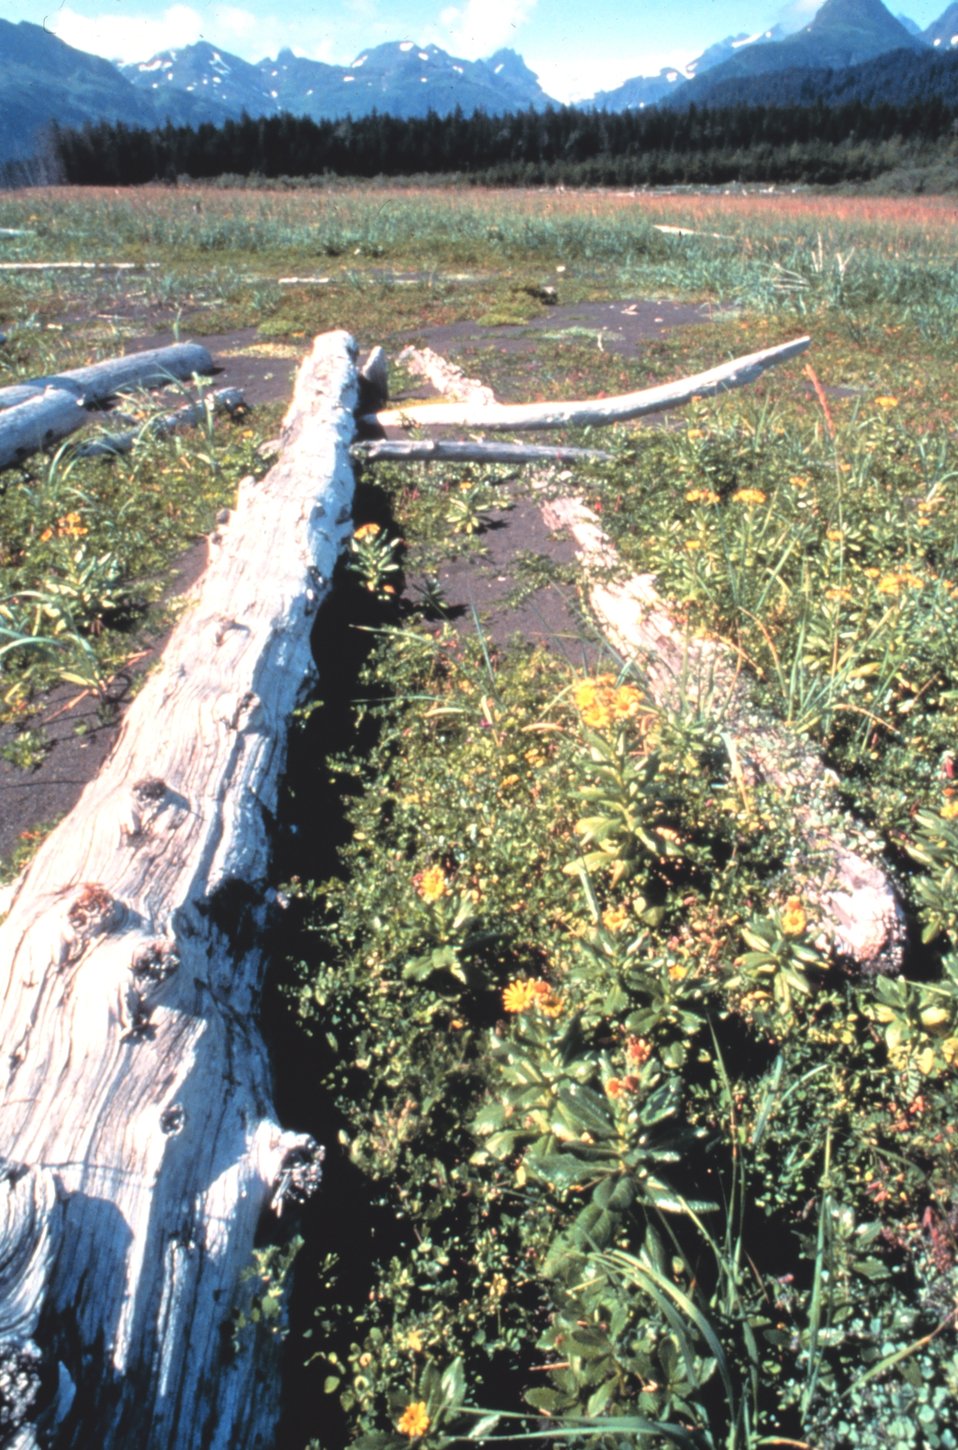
Driftwood on coastal meadow, a reminder of violent winter surf and storms